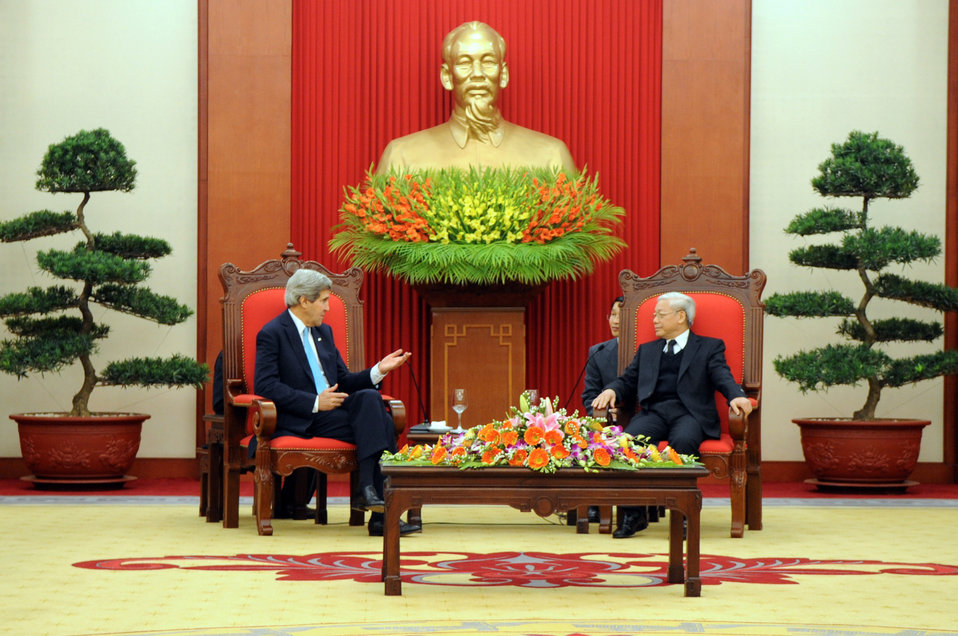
Secretary Kerry Addresses Vietnamese Communist Party Secretary General Trong

U.S. Secretary of State John Kerry, sitting beneath a bust of Ho Chi Minh, addresses Vietnamese Communist Party General Secretary Nguyen Phu Trong at the outset of a meeting in Hanoi, Vietnam, on December 16, 2013.